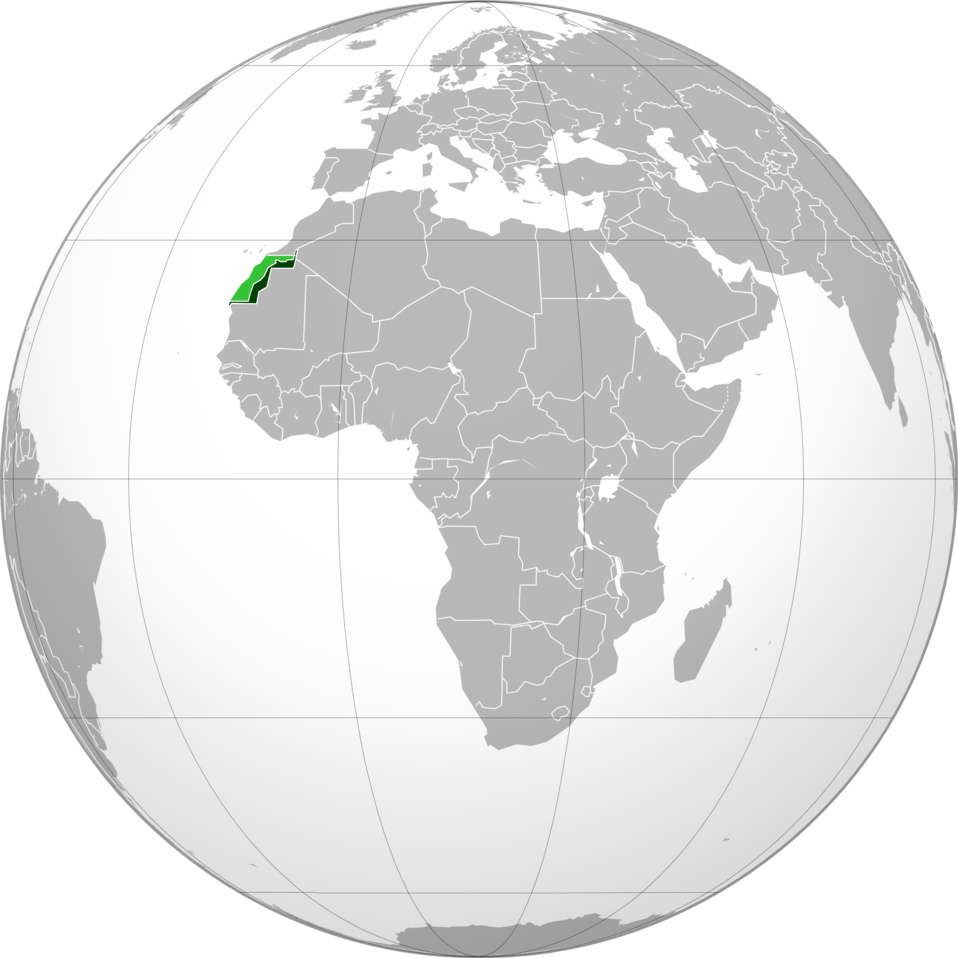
The Sahrawi Republic in green, with claimed but uncontrolled territories in light green.